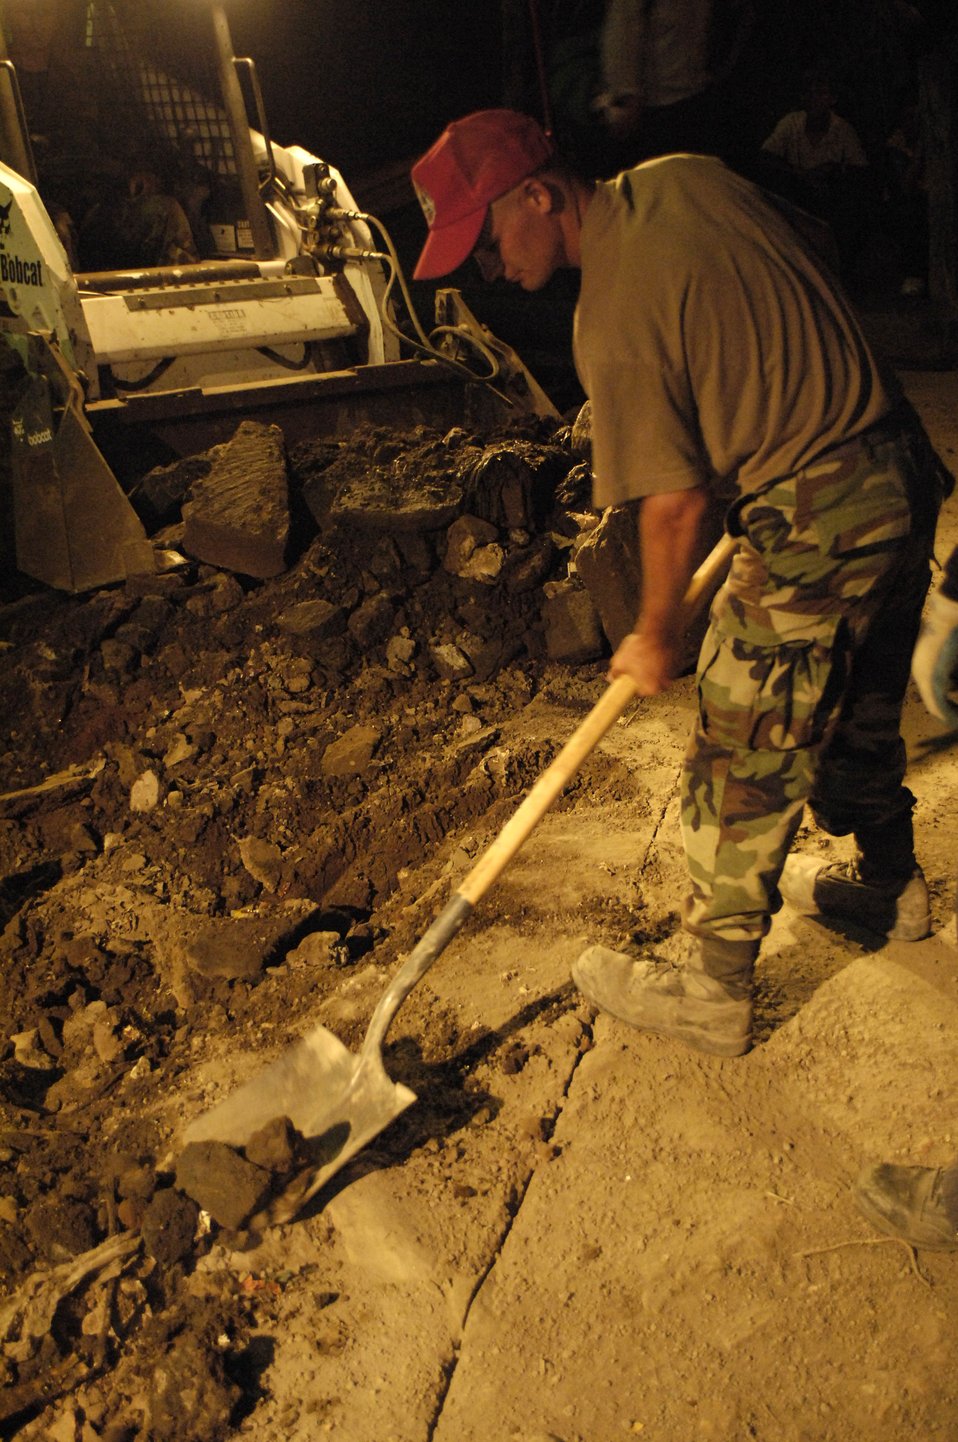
New Horizons-Nicaragua 2007

Senior Airman Damon Bessimer removes debris March 2 during a roadway repair project in Santa Teresa, Nicaragua. The effort was part of New Horizons-Nicaragua 2007, a $7.25 million joint U.S. and Nicaraguan military humanitarian and training exercise, providing a new school, and medical clinic, as well as free health and veterinary care, giving aid and strengthening bonds between the two nations. Airman Bessimer is deployed with the 820th Expeditionary Red Horse Squadron.